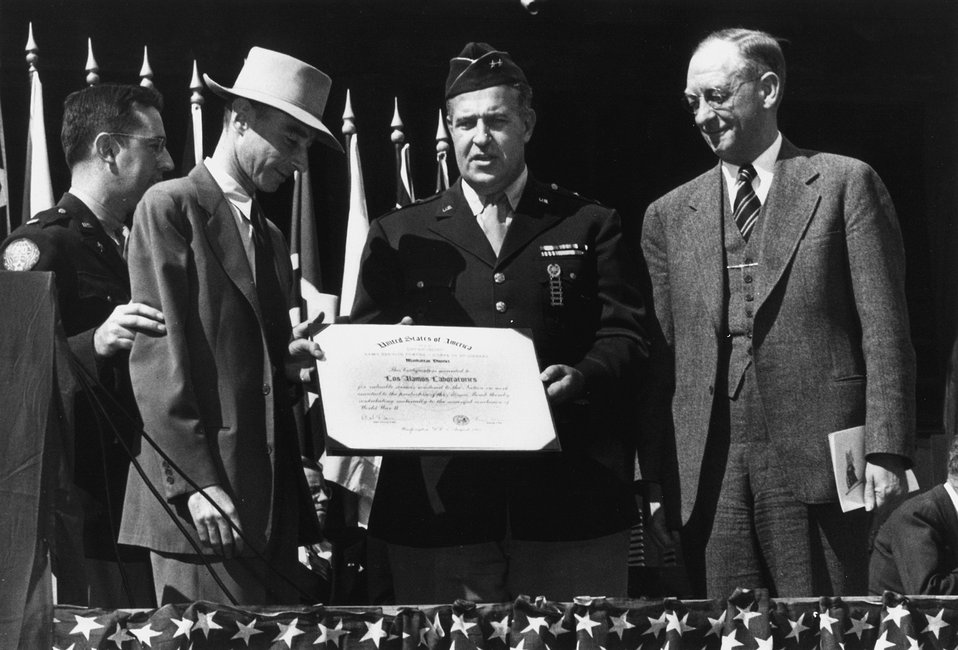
Los Alamos Laboratory presents award to Oppenheimer at the end of the war. c. 1945